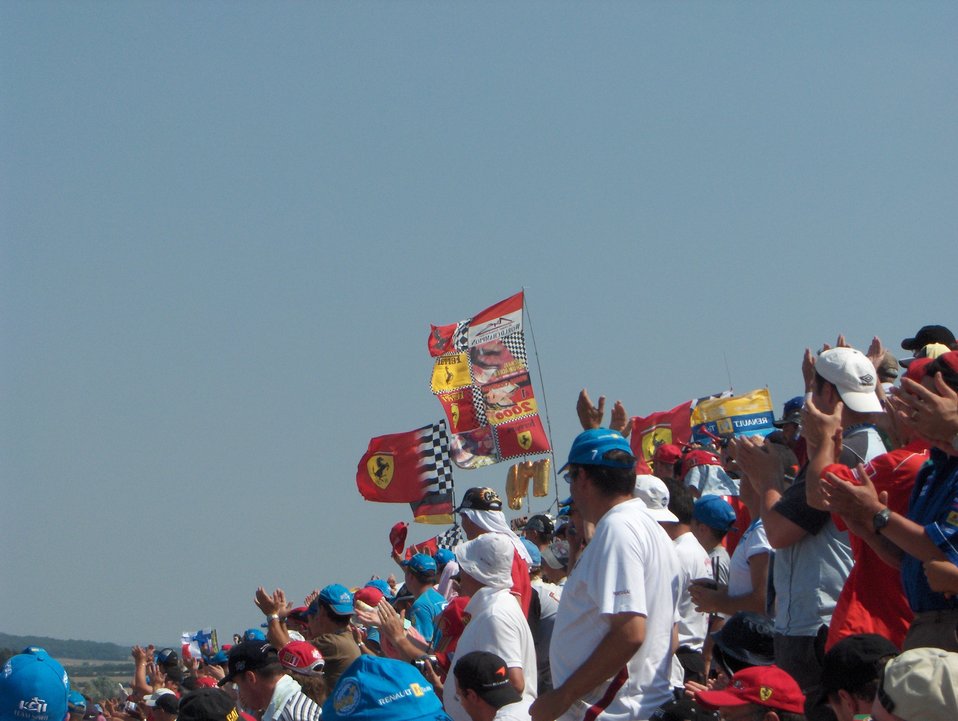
Ferrari and Renault supporters. Circuit de Nevers Magny-Cours, during the 2006 Formula One Grand Prix. Fran√ßais†: Supporters de Ferrari et de Renault. Circuit de Nevers Magny-Cours, lors du Grand Prix de Formule Un en 2006.